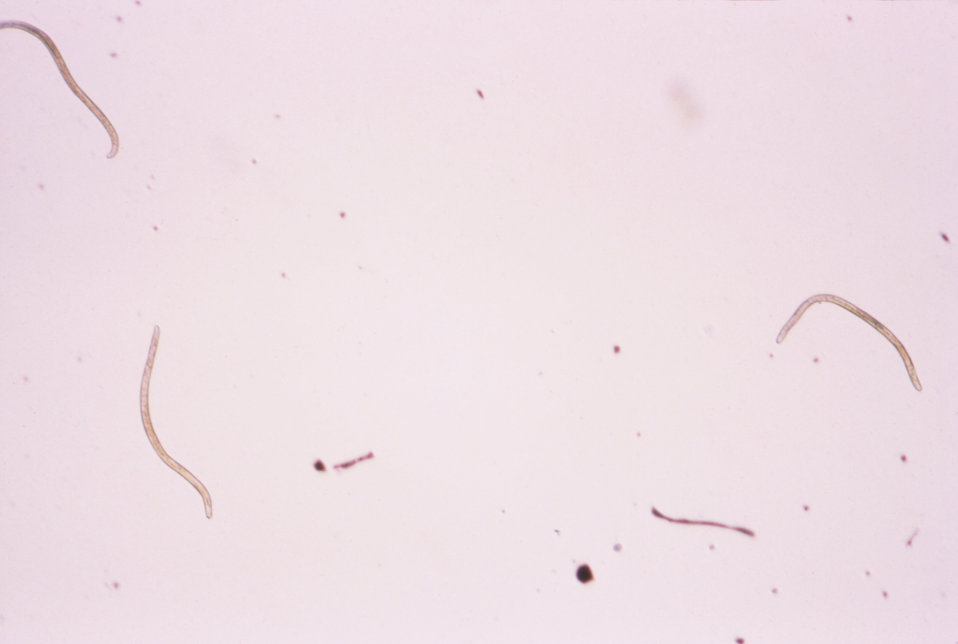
This is a glycerine mount photomicrograph of the microfilarial pathogen Onchocerca volvulus in its larval form.